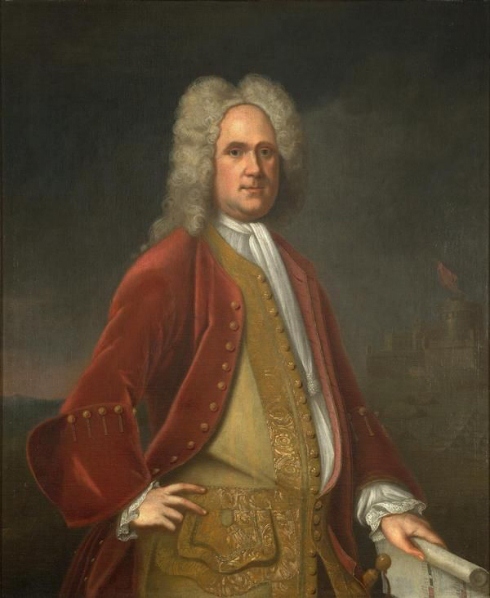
Alexander Spotswood by Charles Bridges (Colonial Williamsburg copy)